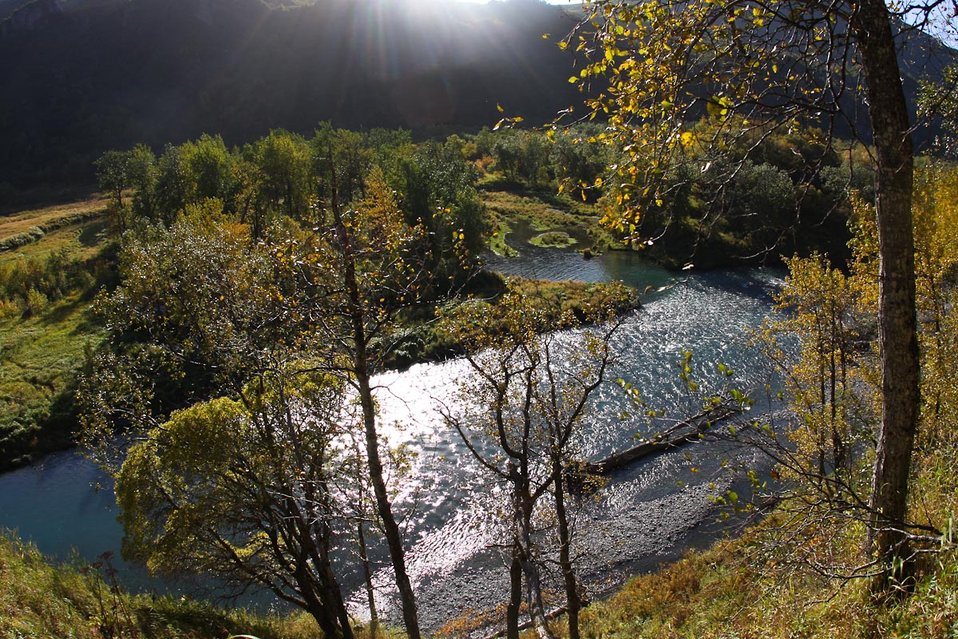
Uganik River

Lisa Hupp/USFWS
Source: Kodiak NWR